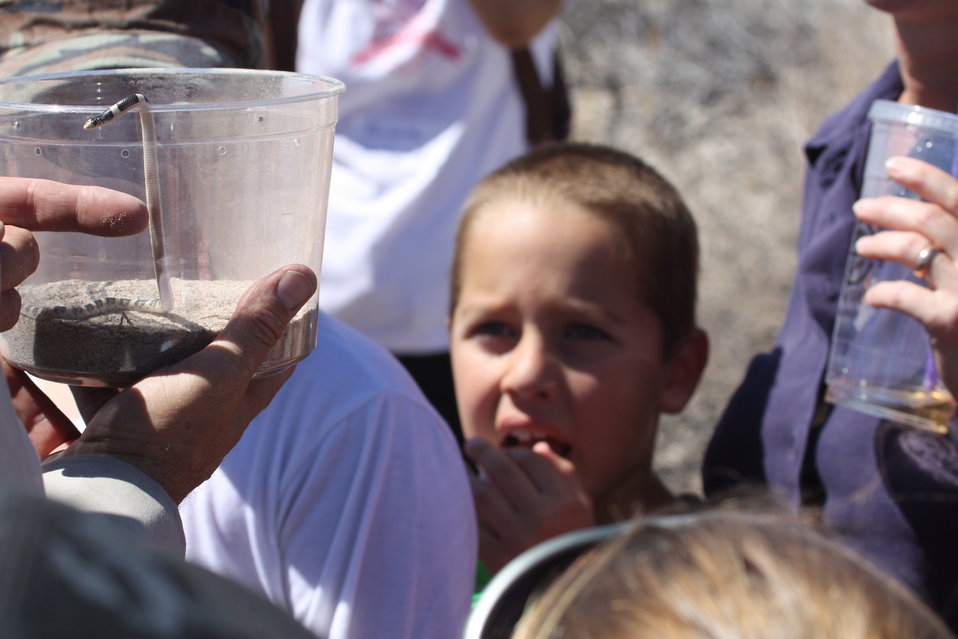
Watching them slither!

Kids were enthralled by the assortment of (mostly native) reptiles that came to Ash Meadows National Wildlife Refuge in September 2011. Paul van Els/USFWS